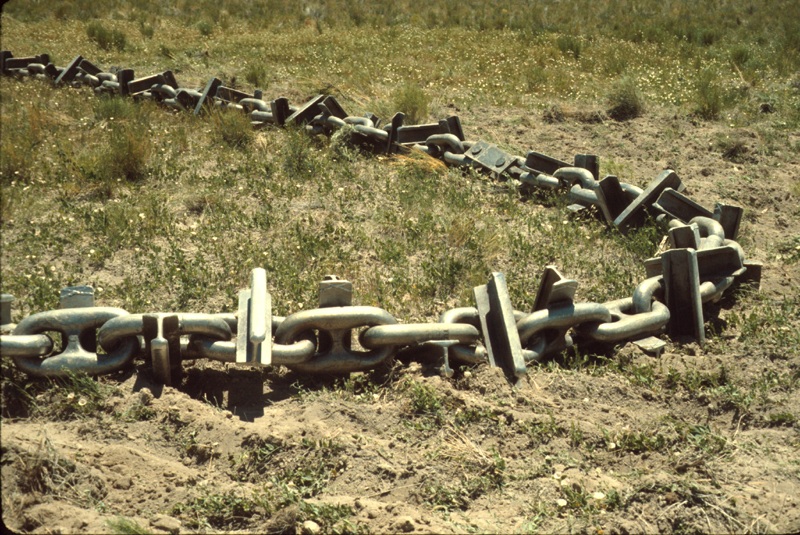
Ely Chain Owyhee Range Restoration Project Lower Snake River District